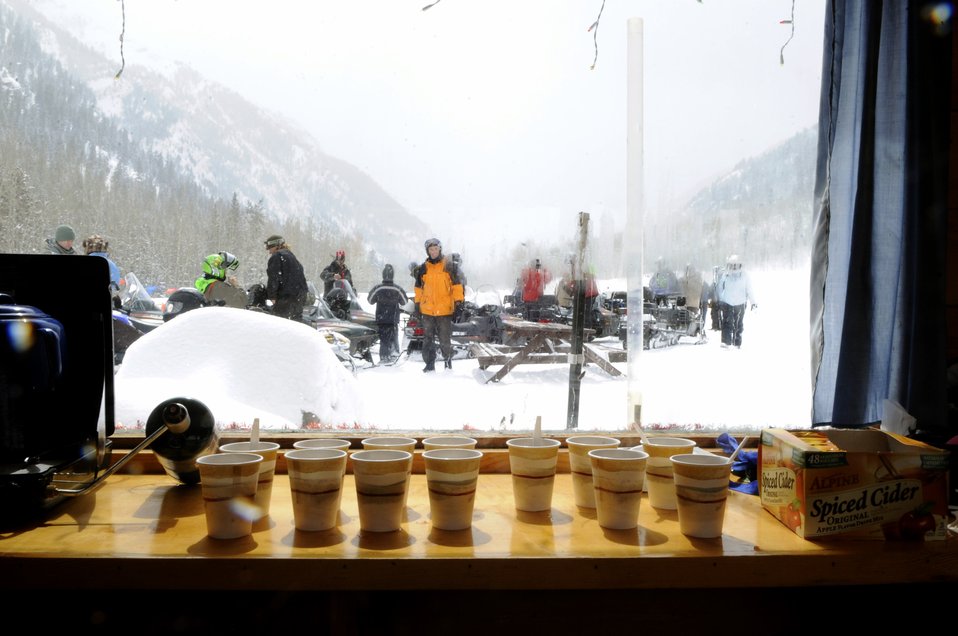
23rd National Disabled American Veterans Winter Sports Clinic

Veterans take a hot cider break after driving a snow mobile Apr. 1 during the 23rd National Disabled American Veterans Winter Sports Clinic in Snowmass Village, Colo. The six-day event that began March 28 teaches veterans with disabilities skills in adaptive Alpine and Nordic skiing, and introduces them to a number of other recreational activities and sports.